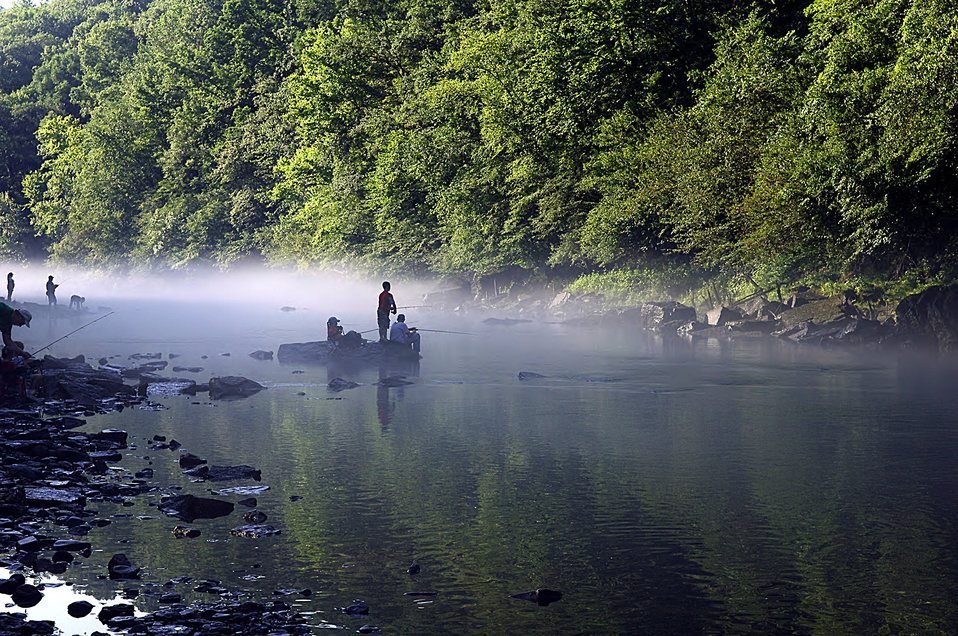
Kids free fishing event

Photo credit: USFWS/Larry Jernigan

Our living resources are vital for ceremonial, spiritual, and subsistence practices by indigenous peoples; recreational activities such as sport fishing, hunting, birding, and nature photography; and commercial interests such as fisheries, wood products, and food production